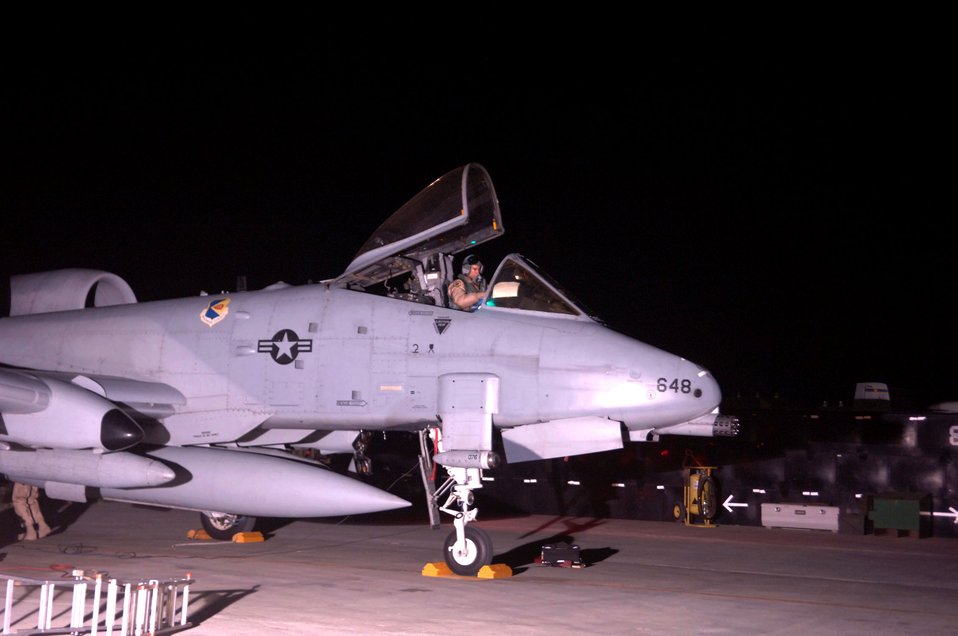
A-10s return to Bagram

An A-10 Thunderbolt pilot prepares to exit the aircraft after landing at Bagram Air Base, Afghanistan, April 17. The A-10s are deployed to the 354th Expeditionary Fighter Squadron from Davis-Monthan Air Force Base, Ariz.